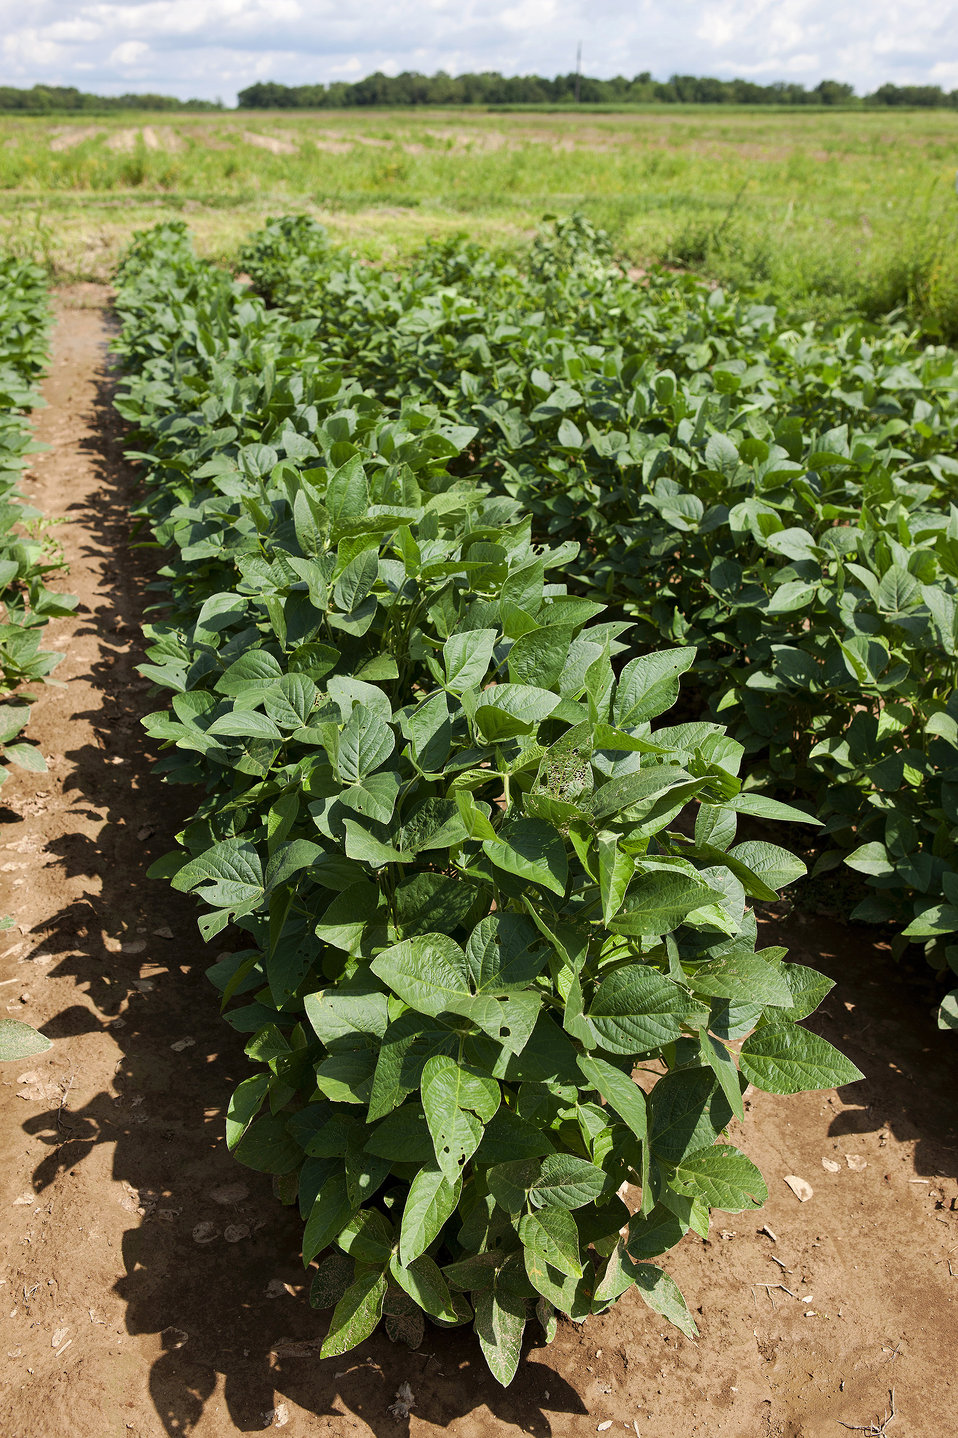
Soybean plants growing a field that was not flooded on Dec. 21, 2002.